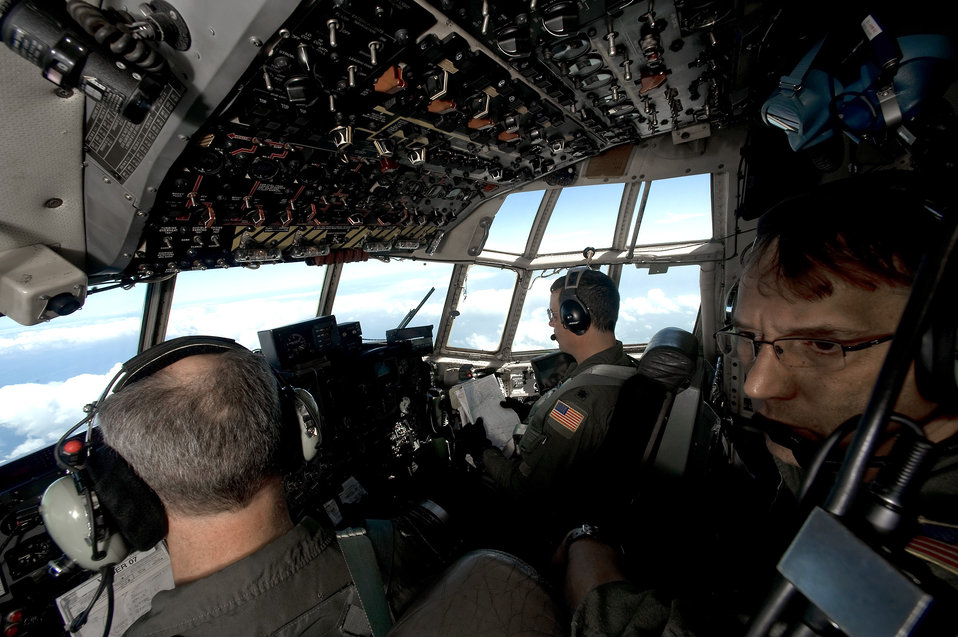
C-130 aircrew helps fight oil spill

Master Sgt. Archie Archambault looks for oil while flying in a C-130 Hercules over the Gulf of Mexico May 7, 2010. Sergeant Archambault is a flight engineer from the Air Force Reserve Command's 910th Airlift Wing at Youngstown-Warren Air Reserve Station, Ohio.